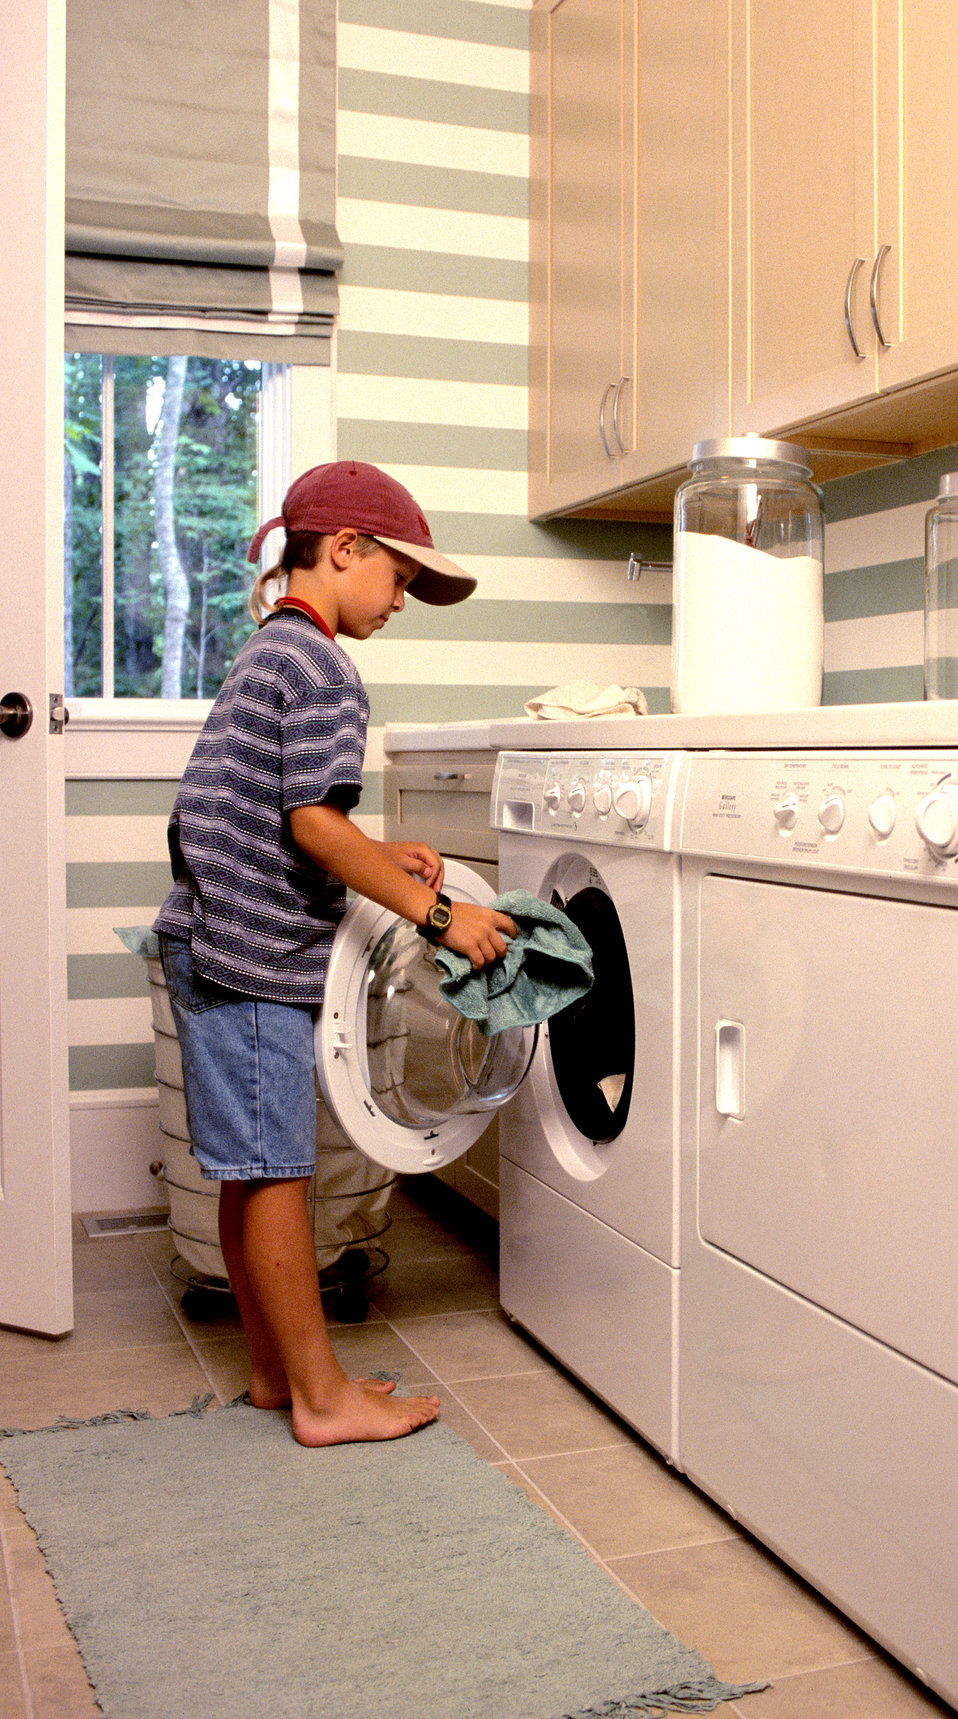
This 2000 image showed a young boy utilizing a front-loading clothes washing machine, which was located directly adjacent to a front-loading clothes dryer. Front-loading washers and dryers are easier to access, for a wider range of users than their top-loading versions. Many people who use wheelchairs, and have trouble bending over, or reaching, or are of short stature such as children, find that front-loading washers and dryers are easier to access. For some people, top loading machines are impossible to use, for one must reach over, and down into these appliances. In this four-image example (see PHIL 9388, 9389, 9390, and 9391), a child, an older adult, and a person using a wheelchair were all shown as benefiting from using the front-loading feature of this washer and dryer. Raised on a pedestal, they become even easier to use for many.